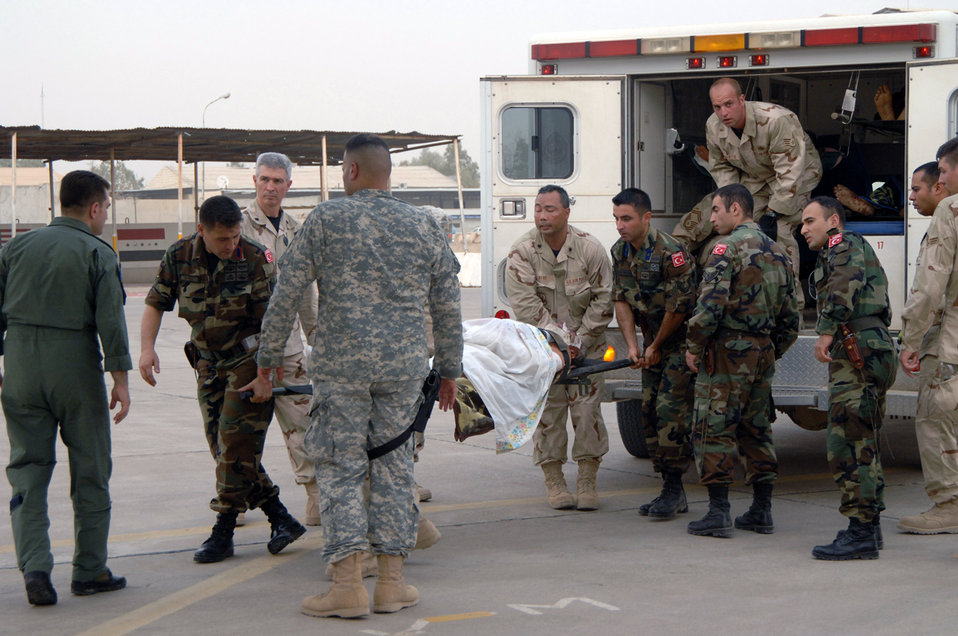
Airmen lead multinational effort for Iraqi bombing victims

Airmen from the 506th Air Expeditionary Group, an Army Soldier and Turkish army and air force members help transport a victim of an Iraqi vehicle borne improvised explosive device to a Turkish medical aircraft July 8 at Kirkuk Air Base, Iraq. The victim was hurt in the July 7 market bombing in Tuz Khurmato, Iraq. Airmen from the 506 AEG worked with Iraqi medical providers and Turkish military members to receive, transfer and aerovac almost 30 injured Turkmen civilians and family members to the Turkish capital city of Ankara for further treatment.